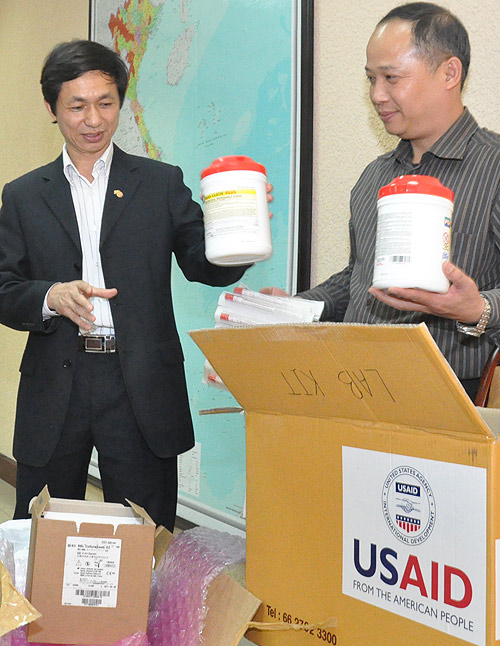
USAID Supplies personal protective equipment and disinfectant to help control infection in Vietnam.